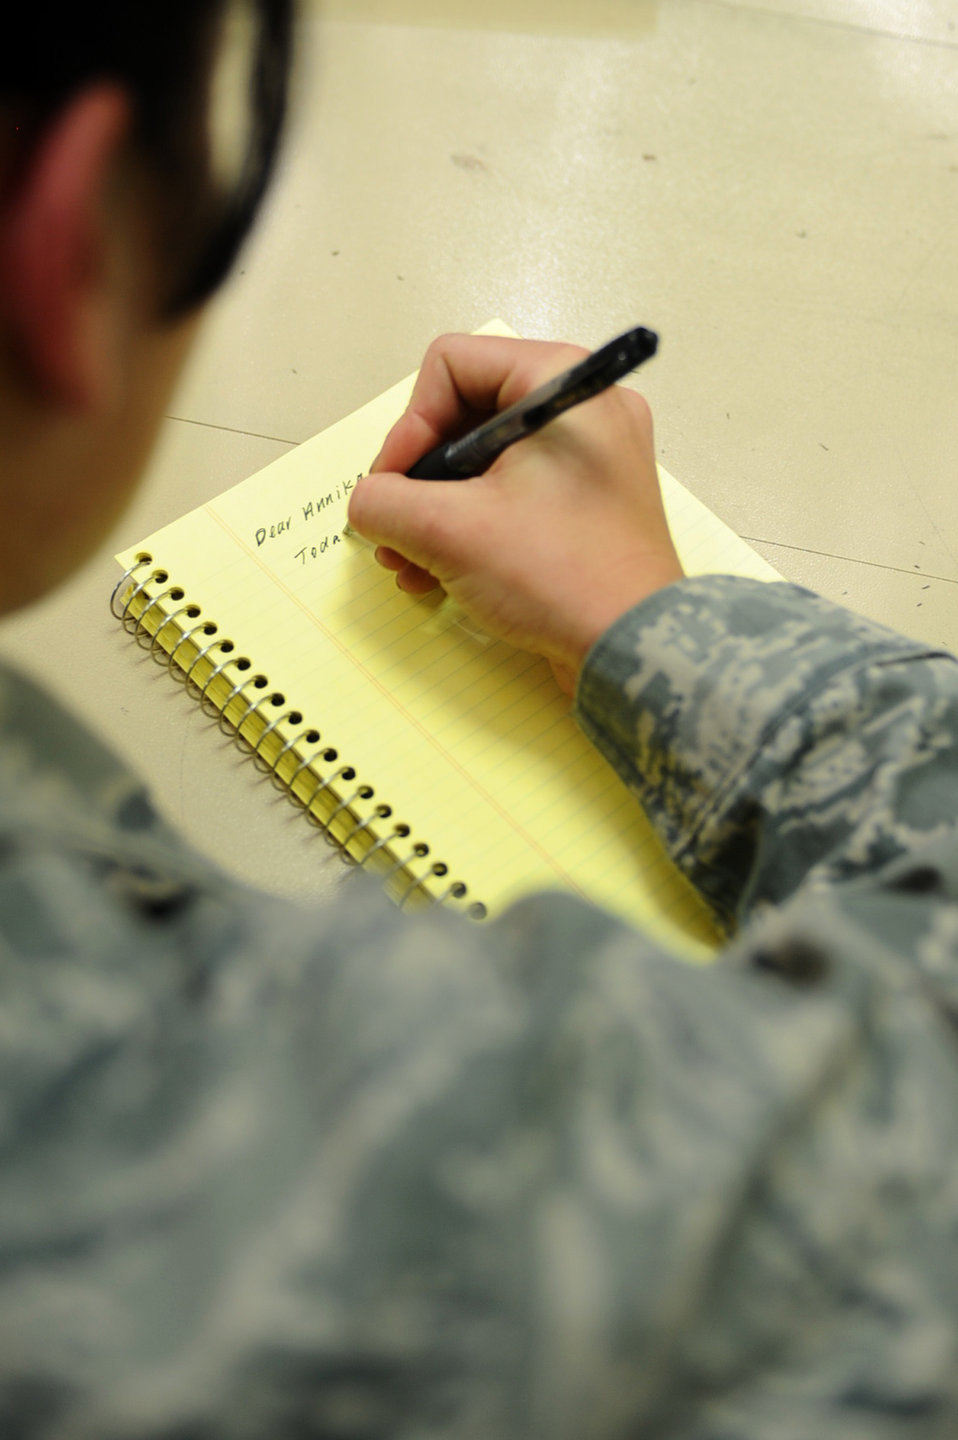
Deployed Airmen support local school pen-pal program

Airman 1st Class Candice Thomas writes a pen-pal letter to a Spring Creek School, S.D., student March 26, 2010, at an air base in Southwest Asia. Airman Thomas is a 379th Expeditionary Maintenance Squadron electro-environmental technician.